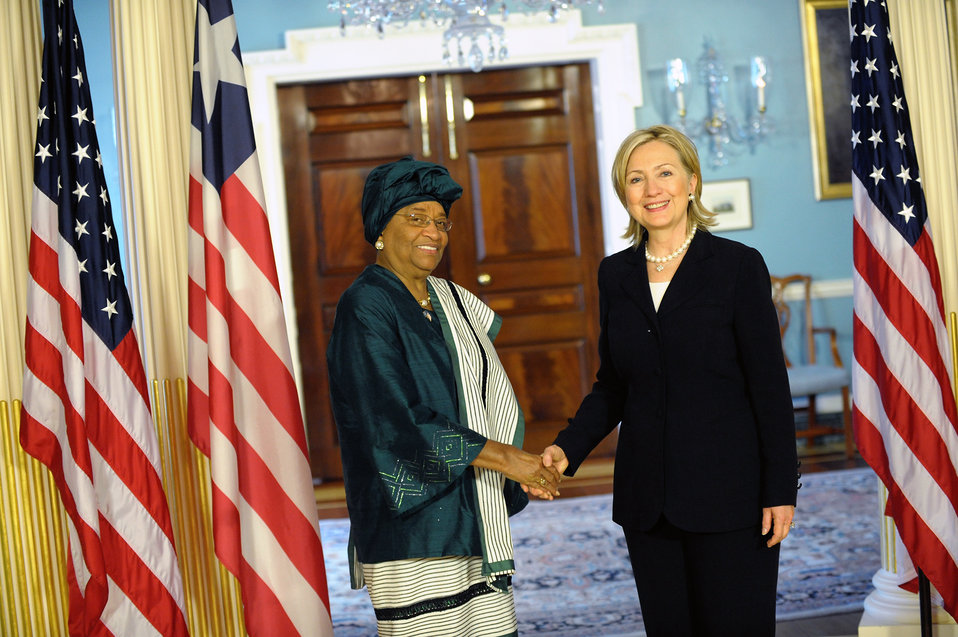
Secretary Clinton Holds Bilateral Meeting With Liberian President Ellen Johnson Sirleaf

U.S. Secretary of State Hillary Rodham Clinton hosts a bilateral meeting with Liberian President Ellen Johnson Sirleaf at the U.S. Department of State in Washington, D.C., on May 27, 2010.